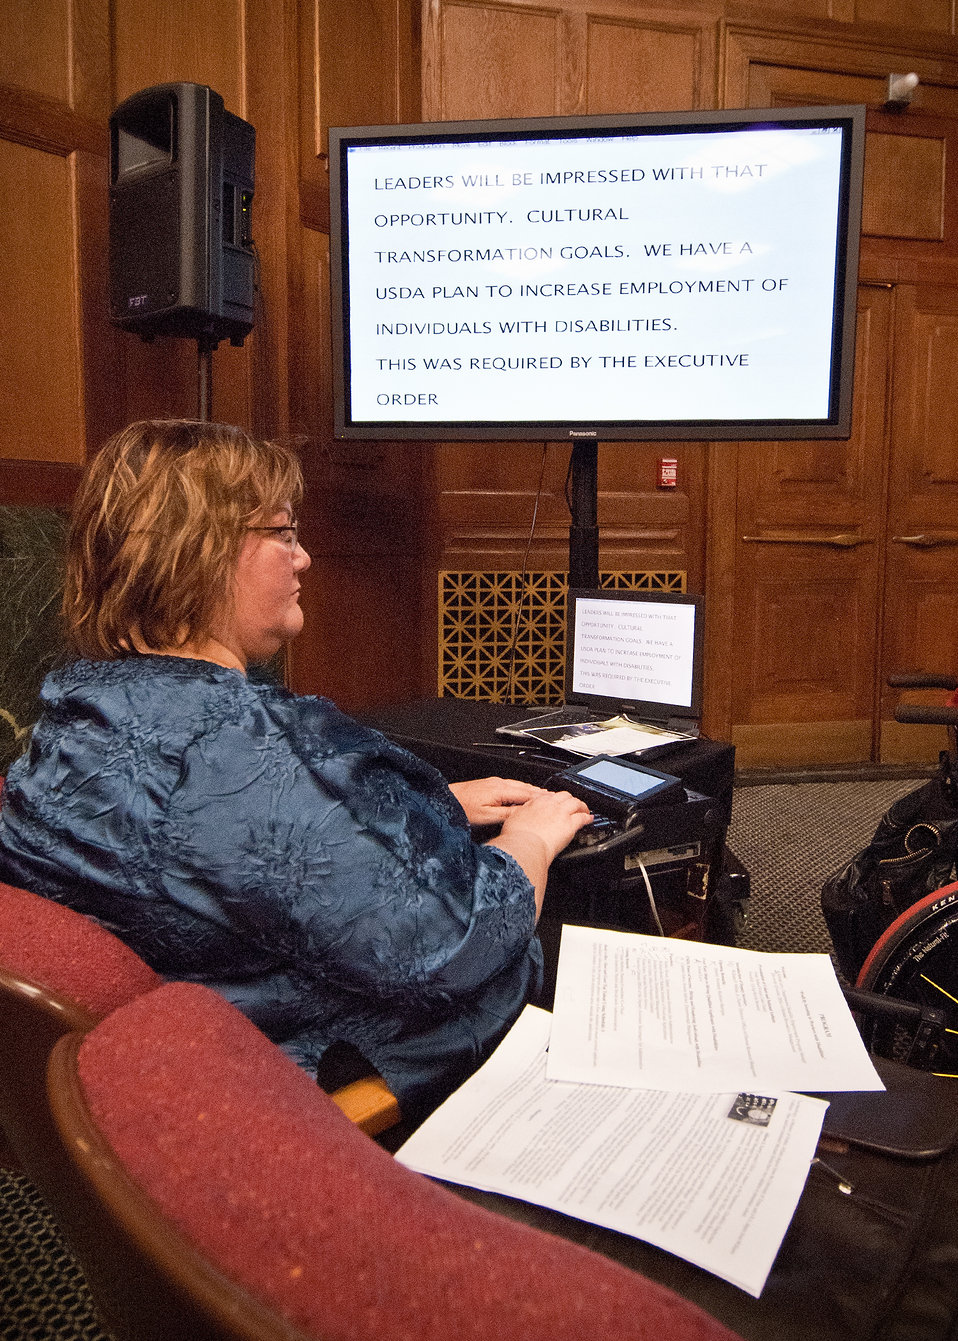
Beverly Early, Close Caption Realtime Translation, close captions the speeches of speakers and panel members for hearing impaired employees during the U. S. Department of Agriculture National Disability Employment Awareness Month event in Washington, DC, Wednesday, October 5, 2011. Agriculture Secretary Tom Vilsack is dedicated to establishing the USDA as the lead Federal agency in employing individuals with disabilities. The theme for the event is “Profit by Investing in Workers with Disabilities.” USDA is committed to ensuring that all our programs are accessible and inclusive of individuals with disabilities.